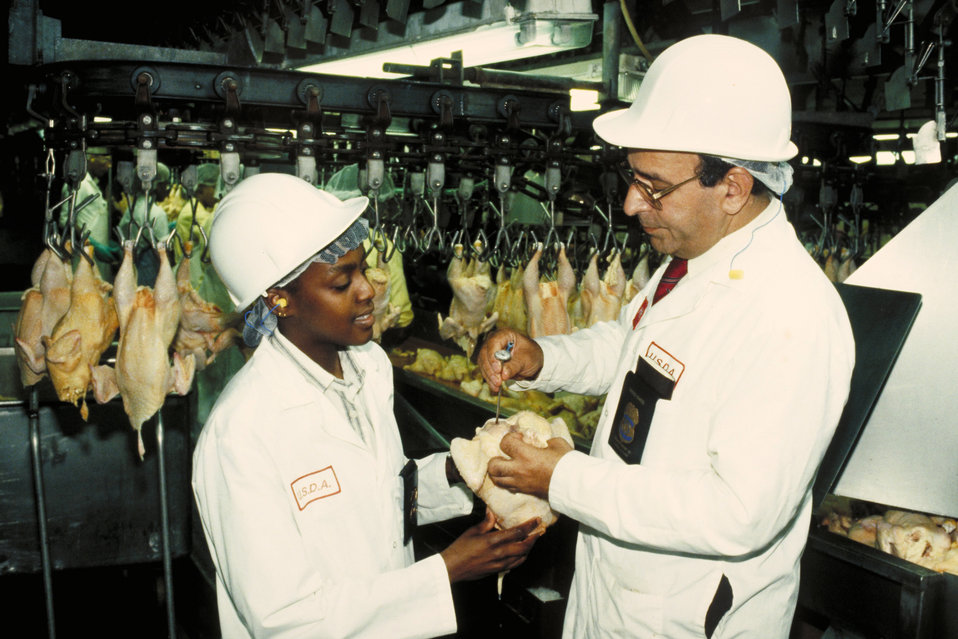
U.S. Department of Agriculture (USDA) Food Safety Inspection Service (FSIS) inspectors check the temperature of chicken carcasses at various control points to compare them with those measured and recorded by the plant to prevent multiplication of pathogenic bacteria in compliance with Hazard Analysis and Critical Control Points (HACCP) issued by FSIS on June 15, 1995. USDA photo Lester Shepherd.